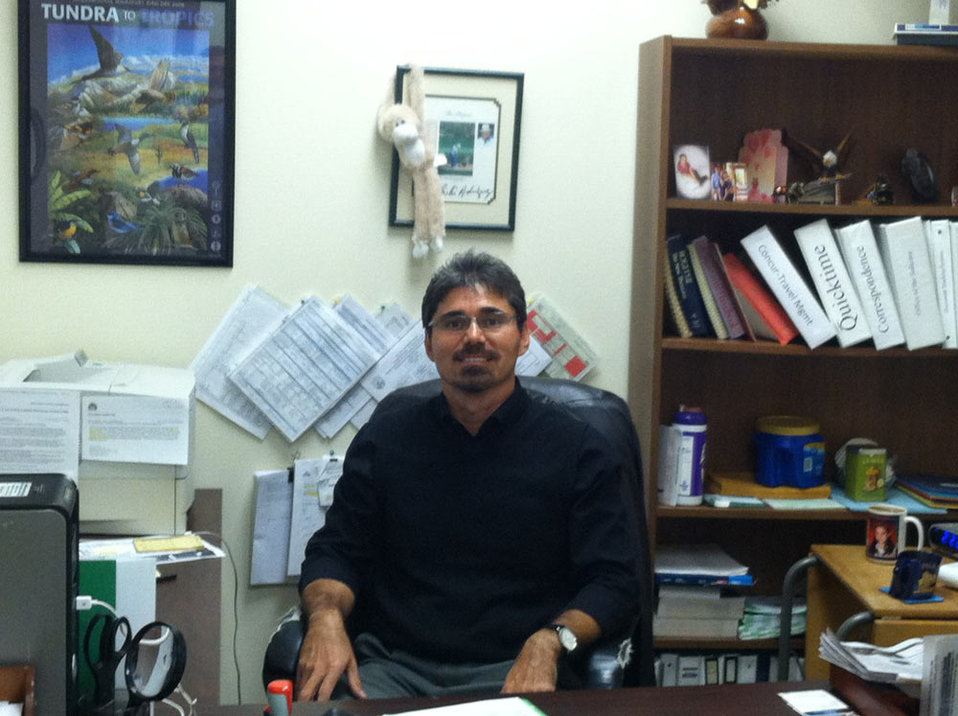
Lawrence Olguin--Southwest Region

Lawrence Olguin has been with the U.S. Fish and Wildlife Service for 3 1/2 years as a Program Support Assistant to the Executive Assistant in the Ecological Services Division Southwest Regional Office. HE served in the Army-New Mexico National Guard.